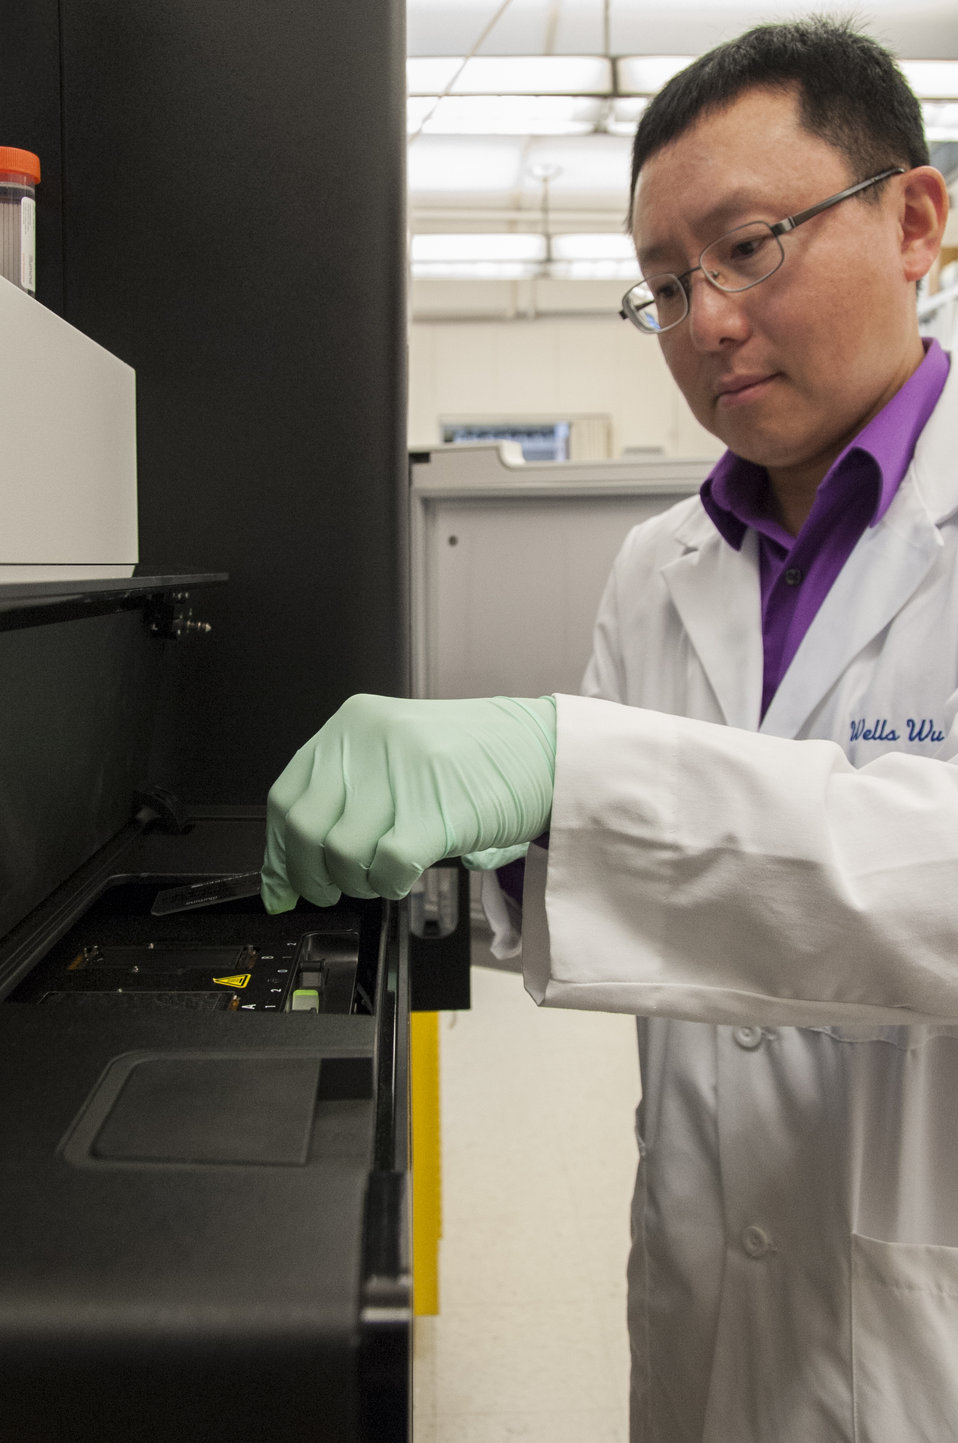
Bio Threats: FDA's A-Team (6318)

Zuben Sauna, Ph.D., principal investigator in CBER’s hemostasis laboratory, and chemist Wells Wu, Ph.D., (shown) are exploring the shapes of proteins used in medical treatments to determine why they prompt a strong reaction from the body’s immune system. Suspecting that the shapes may be part of the problem, the researchers are using tiny pieces of DNA-like molecules called aptamers to probe the proteins. Hemostasis is the process of getting bleeding to stop and the antibodies that cling to these proteins are causing life-threatening complications, particularly in the treatment of bleeding disorders.

Scientists at FDA’s Center for Biologics Evaluation and Research (CBER) work to facilitate the development of safe, effective treatments that would neutralize biological threats to public health and security. CBER regulates preventive and therapeutic vaccines, blood and blood products, human cell and tissue-based products, gene therapies and xenotransplantation. To learn more, read this FDA Consumer Update:

• FDA Teams Prepare for Biological Threats